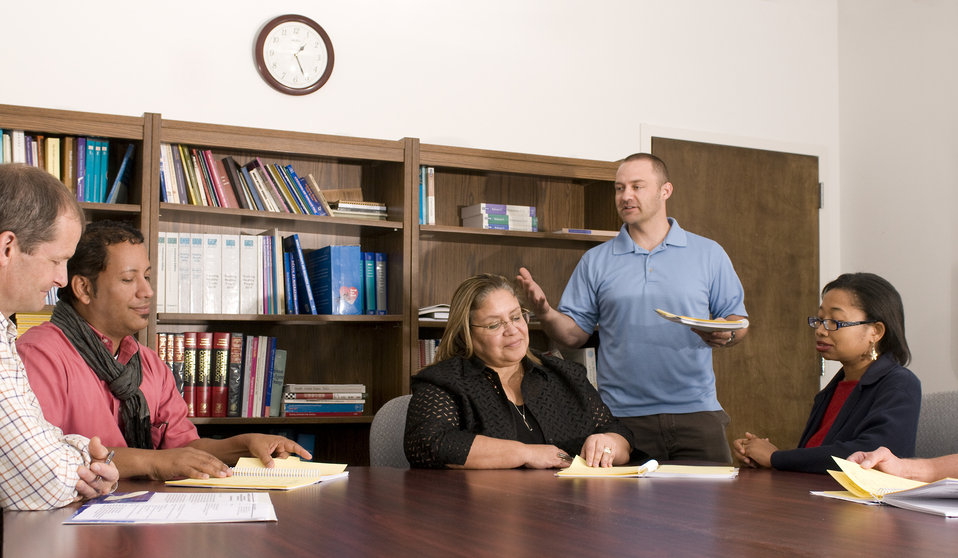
This image depicts a group of healthcare workers seated at a table discussing a strategy they would be implementing, which would guide them through an instructional campaign centered on the education of the diabetic patient to the healthy lifestyle one must implement in order to maintain control over the detrimental effects of this disease. One of the attendees had stood up, and was discussing some literature that had been brought to the meeting.